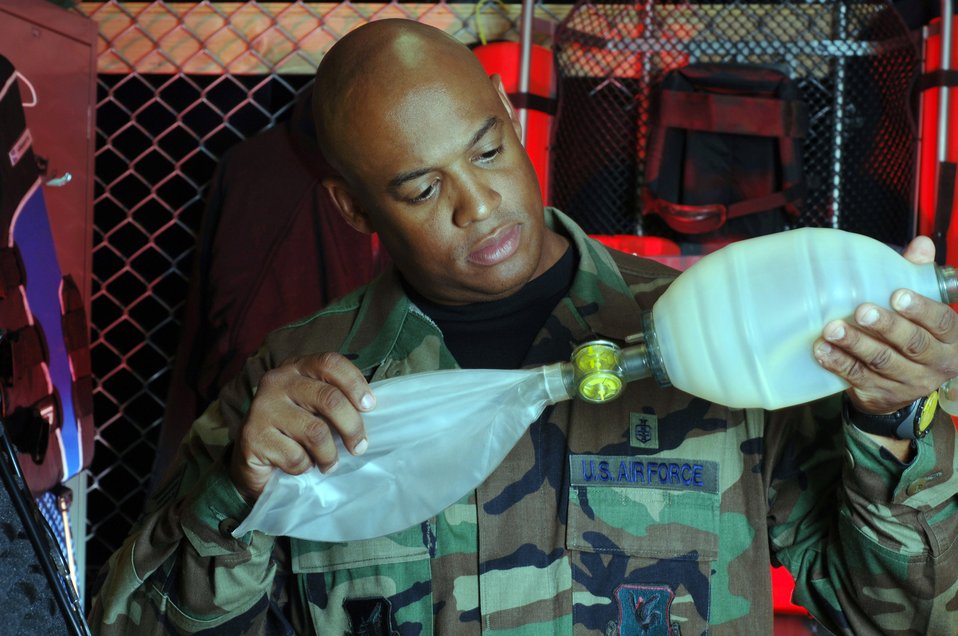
Medical inspection

KADENA AIR BASE, Japan -- Tech. Sgt. Gerry Lawrence inspects an Ambu bag used inside a boat cage here. The bag is part of a medical kit he provides to 31st Rescue Squadron pararescuemen during water training. He is assigned to the squadron's medical element.